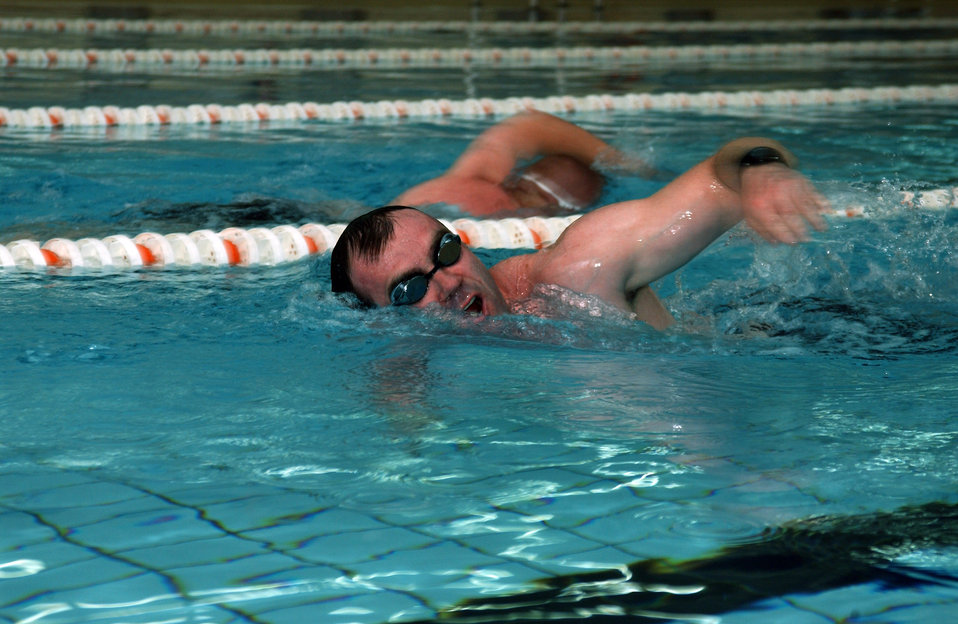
Deployed JAG preps for combat rescue challenge

Capt. Jake Pugh swims anywhere from 1,500 to 3,000 meters and works out for about two hours a day at the Balad Air Base, Iraq, fitness center. He started the training initially for self improvement but is now preparing for tryouts to become a combat rescue officer. Captain Pugh is assigned to the 332nd Air Expeditionary Wing as the deputy staff judge advocate. He is deployed from the 3rd Wing at Elmendorf Air Force Base, Alaska.